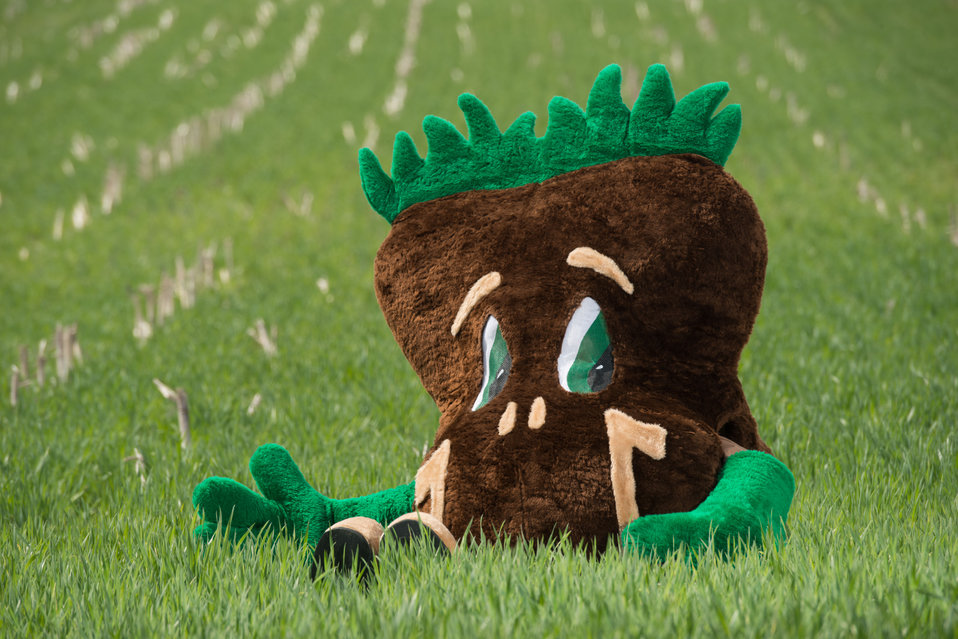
The U.S. Department of Agriculture’s (USDA) Natural Resources Conservation Service (NRCS) mascot Sammy Soil on the Sunny Ridge Farm in Laytonsville, MD on Monday, Apr. 28, 2014. The Sunny Ridge Farm owned by the Stabler family uses a number of conservation practices to promote soil health and water quality. No-till cropping systems use cover crops that help water soak deep into the soil and machines work lightly on top of the soil preserving vertical pores that are water’s pipeline to the roots. Cover crops prevent erosion, improve soil health, hold water, supply nutrients, and suppress weeds and pests. Fenced waterways keep livestock away from the streams and drainage to low points of fields, which allows grass, trees and other vegetation to grow. The plants take up nutrients from the livestock effluent, reducing pollution to waterways. The farm also has a well-designed agrichemical facility for an environmentally safe area to handle and store tanks of on-farm chemicals.